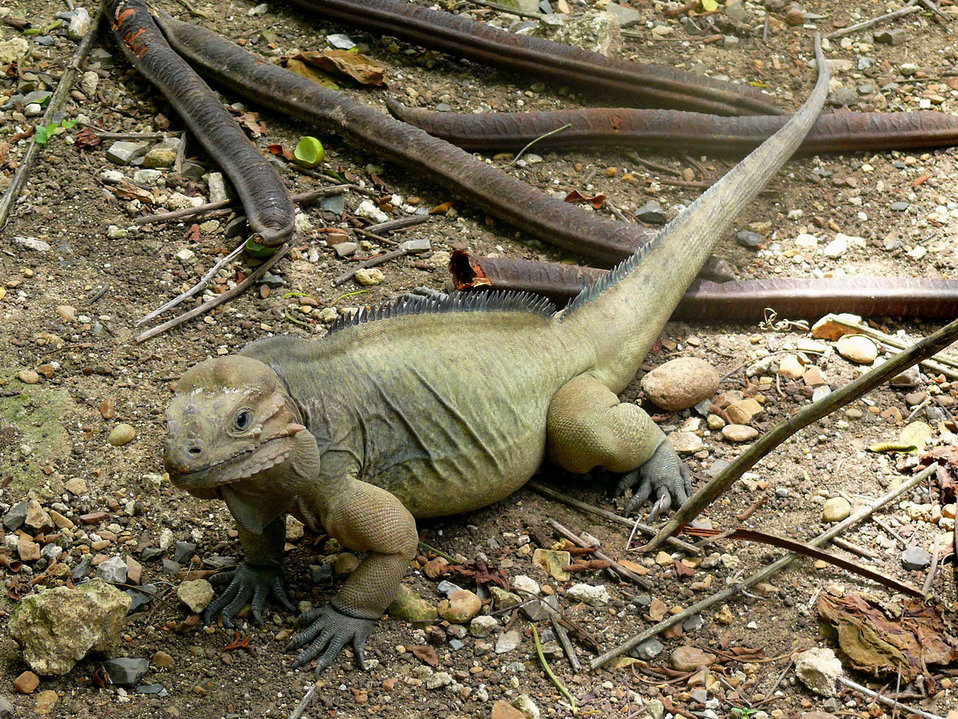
Iguana in nature environment.